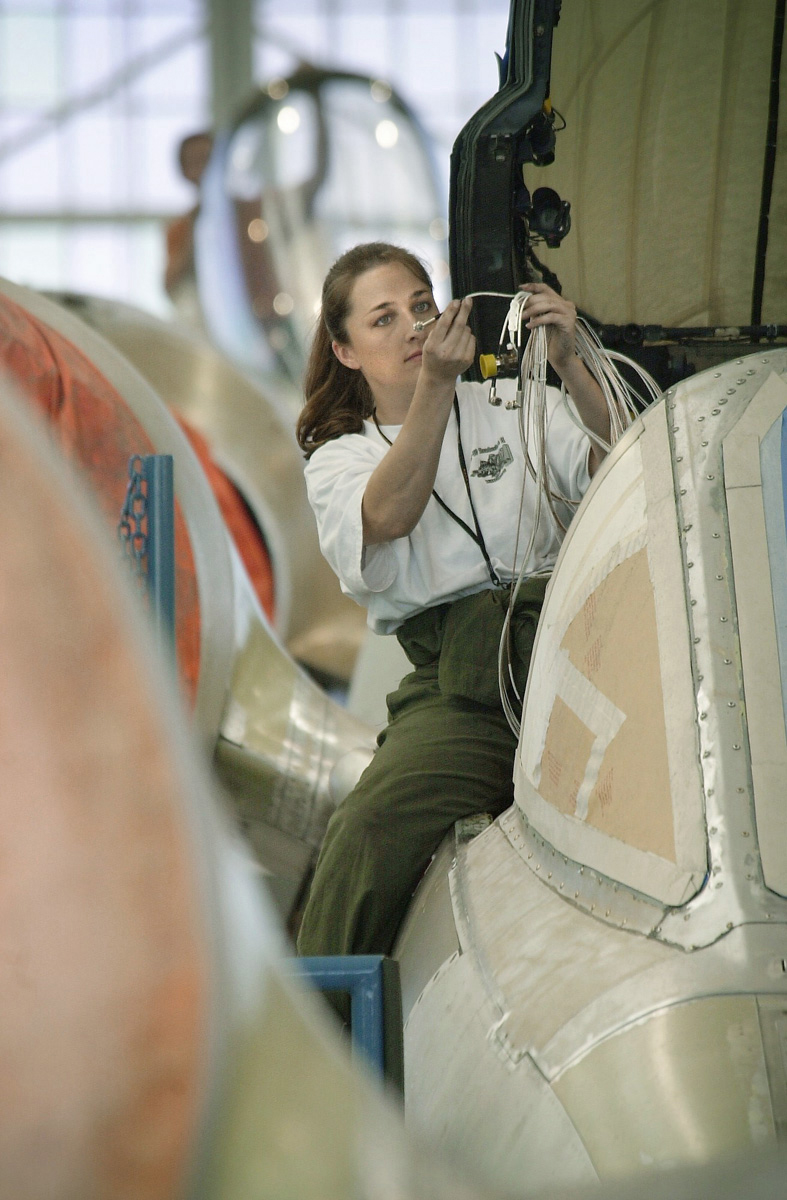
Hog Heaven

1990's -- HILL AIR FORCE BASE, Utah -- Shauna Sullins installs a wire harness in an A-10 Thunderbolt II. She works in